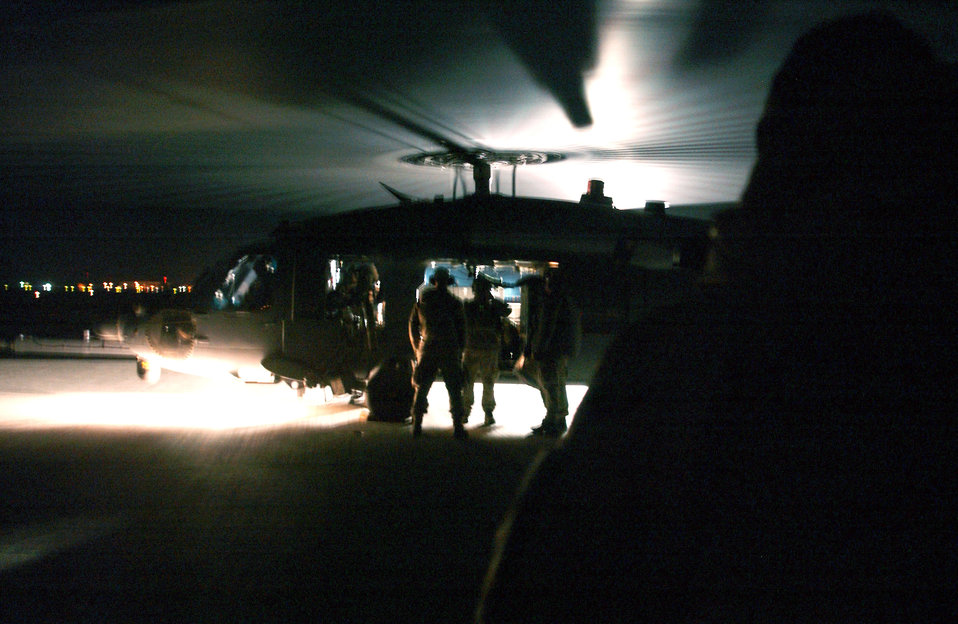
Maintainers keep helicopters flying

A HH-60G Pave Hawk prepares to launch Nov. 7 at Balad Air Base, Iraq. Members of the 64th Expeditionary Helicopter Maintenance Squadron are responsible for maintaining the aircraft flown by the 64th Expeditionary Rescue Squadron.